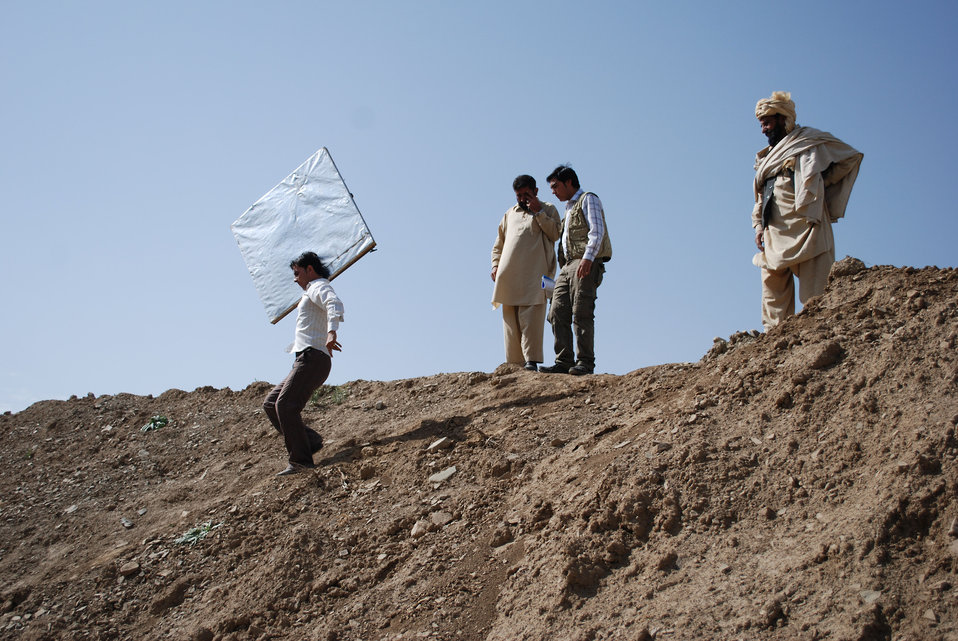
'On the Road' in Paktya Province